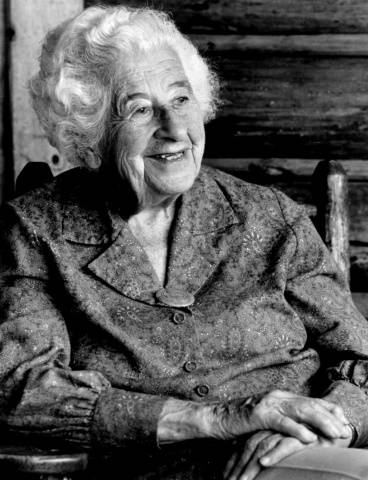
Mardy Murie

Author, adventurer and conservationist Mardy Murie pushed for passage of the Wilderness Act and the creation of Arctic National Wildlife Refuge. (USFWS)